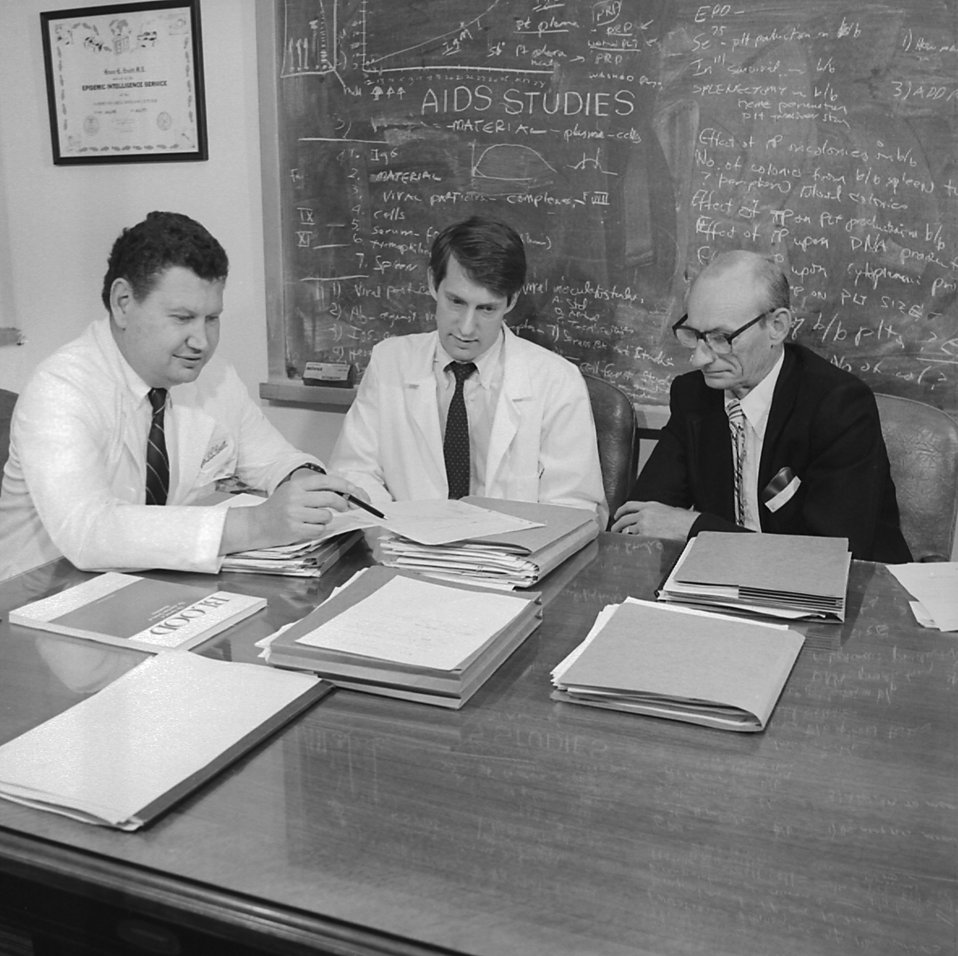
These Epidemic Intelligence Service (EIS) officers are conducting AIDS research.